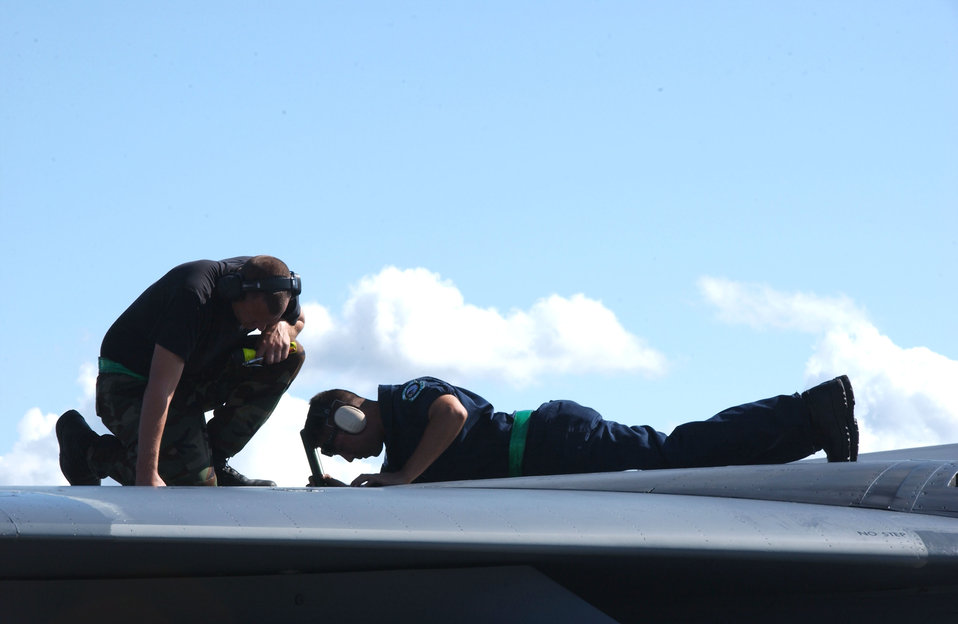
Strike Eagle fully loaded

Staff Sgt. Aaron Leffel (left) and Staff Sgt. Steven Tolliffe troubleshoot a hydraulic leak in an F-15 Strike Eagle at Eielson Air Force Base, Alaska, July 24 during Red Flag-Alaska 07-3. The Airmen are assigned to the 4th Aircraft Maintenance Squadron at Seymour Johnson Air Force Base, N.C.